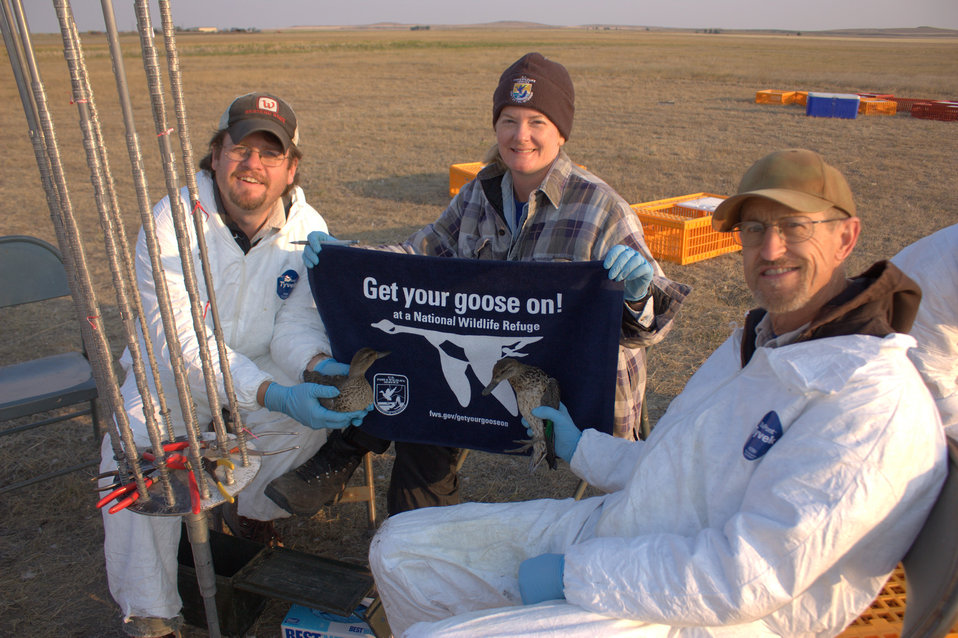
GYGO! - Duck Banding Style